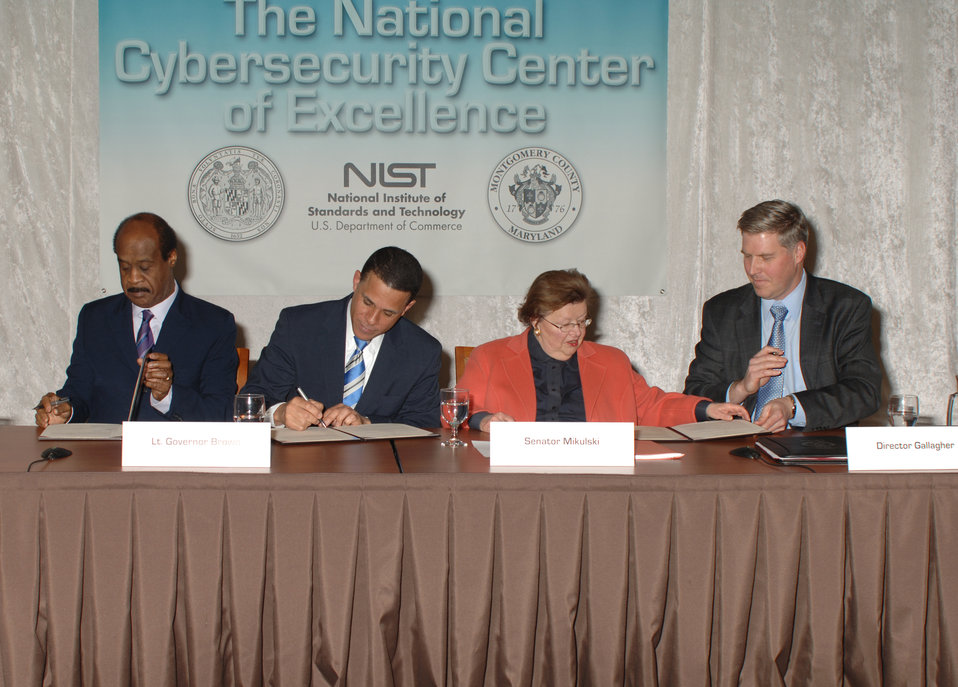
National Cybersecurity Center of Excellence MOU Signing

The State of Maryland and Montgomery County, Md., partner with NIST in the New National Cybersecurity Center of Excellence. At the Memorandum of Understanding Signing Feb. 21, from left to right, Montgomery County Executive Isiah Leggett, Maryland Lt. Governor Anthony Brown, U.S. Senator for Maryland Barbara Mikulski and Under Secretary of Commerce for Standards and Technology and NIST Director Patrick Gallagher.